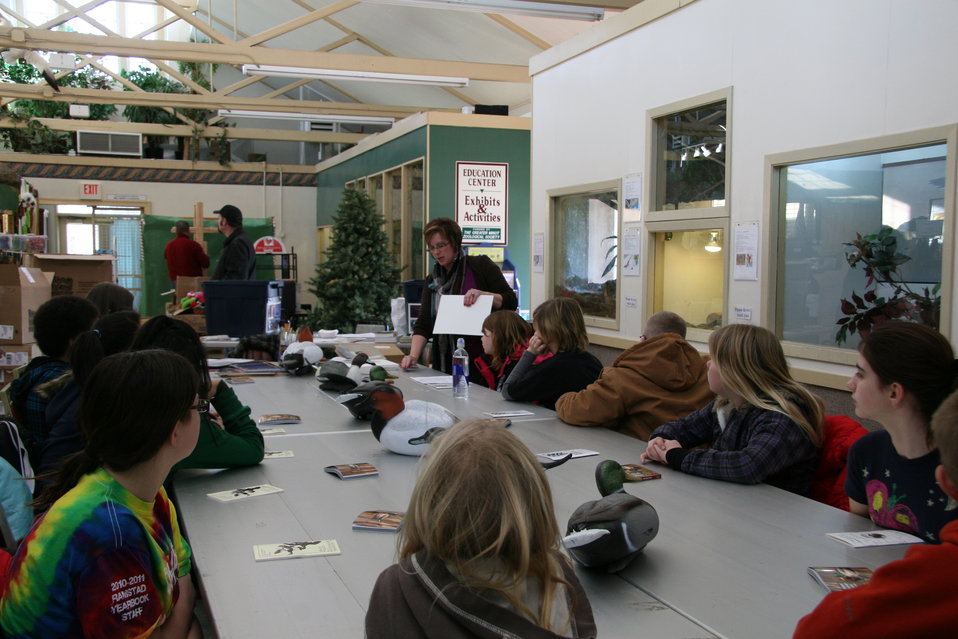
North Dakota Junior Duck Stamp Program - Learning Art Techniques

Jane Kalmbach of Kenmare, ND - teaching particpants about some basic art techniques the students used during the Jr Duck Stamp Program. This program crosses cultural, ethnic, social, and geographic boundaries to teach greater awarness of our Nation's natural resources.